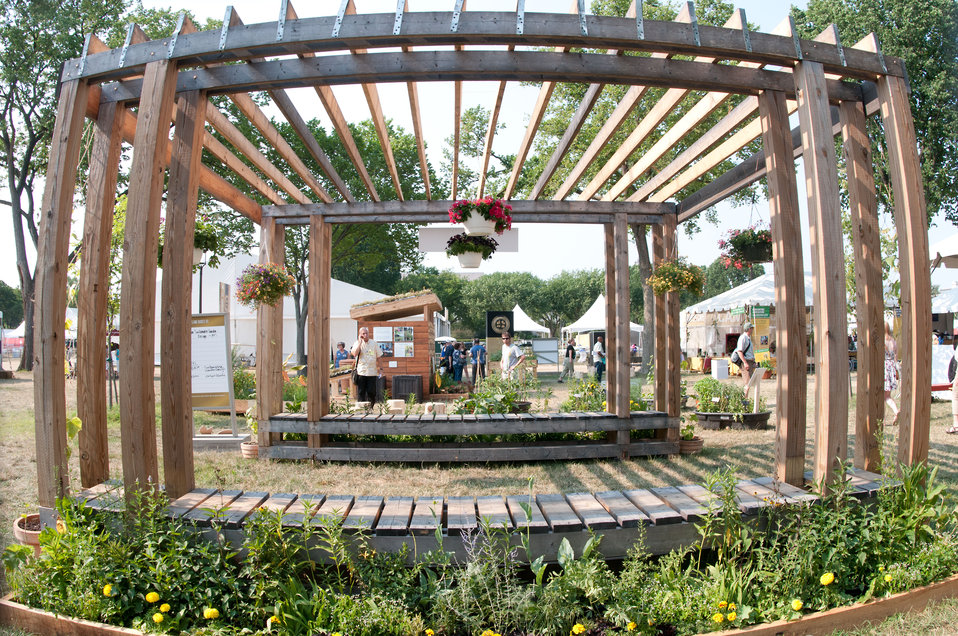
This gazebo serves as a venue for speakers and demonstrated that designs such as this provide an attractive seating area, sturdy place for hanging plants, trellis for plant vines and an ideal place to enjoy the aroma of herbs at the 2012 Smithsonian Folklife Festival in Washington, D.C., on Thursday, June 28, 2012. If left to grow, the canopy of plants serve to shade and humidify arid climates by creating a cooler microclimate. One of the three themes this year is “Campus and Community.” It celebrates the 150 years of the USDA and the Land-Grant University System. The U.S. Department of Agriculture (USDA) and the Land-Grant system extend education across the country, contributing to American agriculture success and rural prosperity. “Campus and Community” has demonstrations, discussions, hands-on activities, and entertainment to that showcase the many ways that this partnership works to improve American agriculture and rural life.